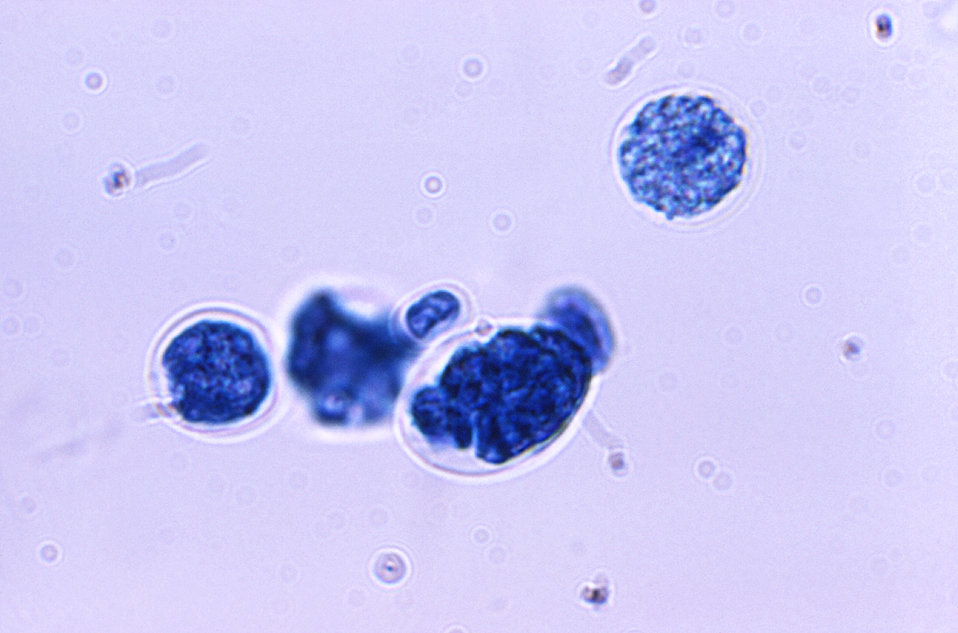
At a magnification of 1125X, this photomicrograph revealed the presence of a number of Prototheca stagnora algal organisms.